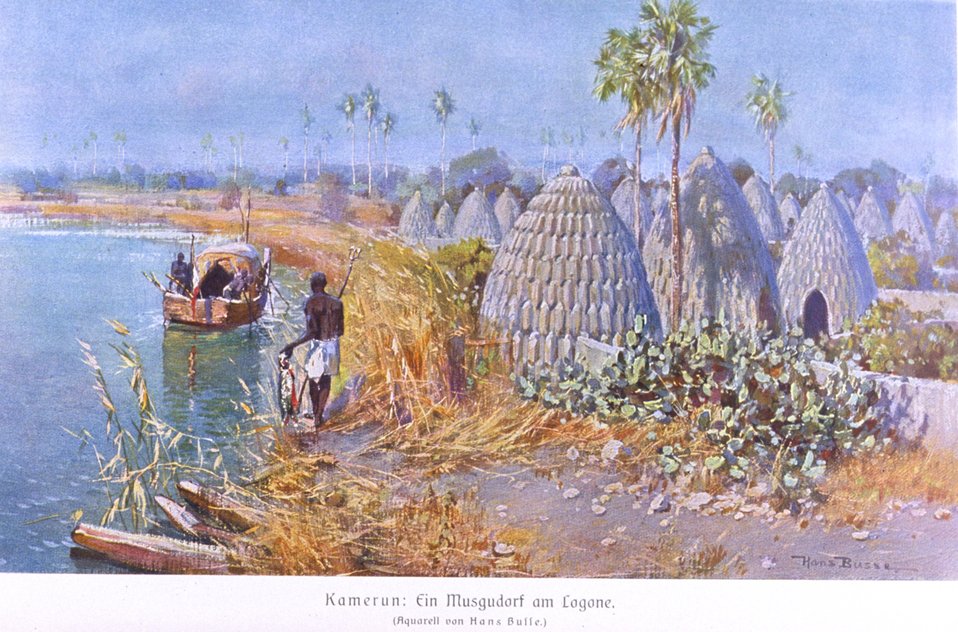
Cameroon German colony - a village on a lake. In: 'Das Deutsche Kolonialreich,' by Hans Meyer, 1909. Vol I, p. 626. Library Call Number: Cfd M612 d